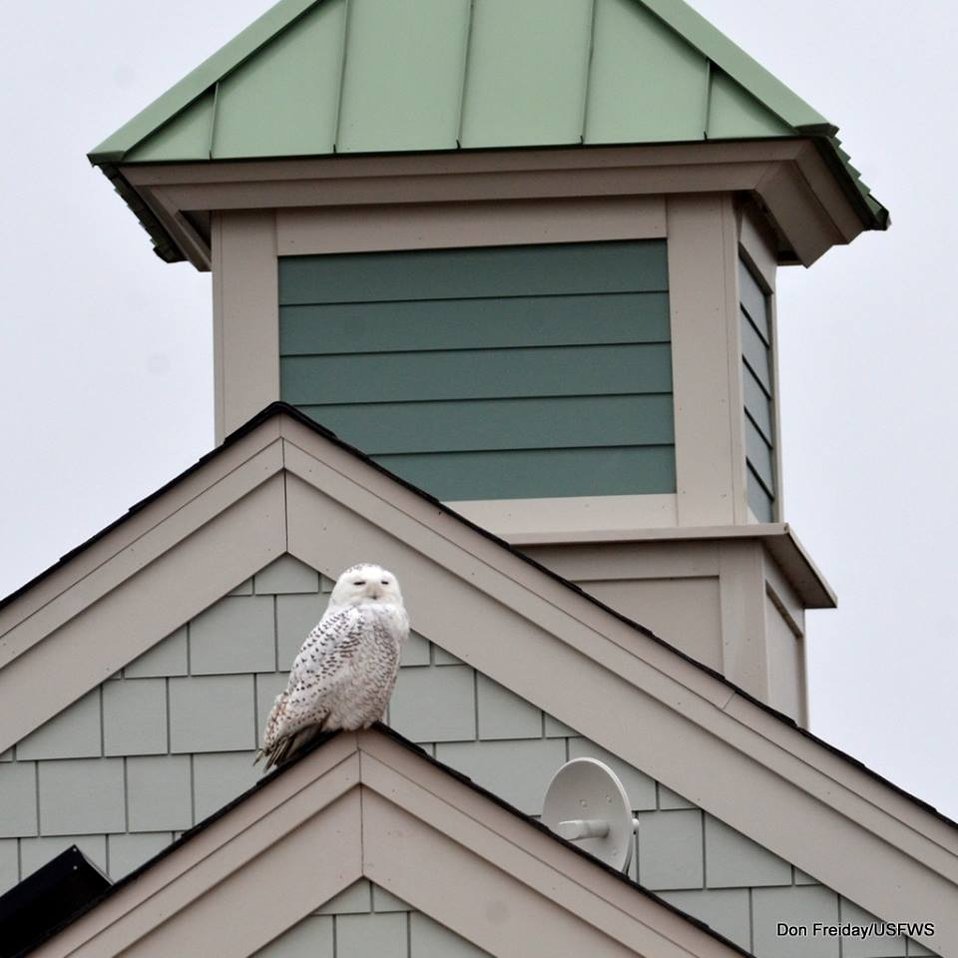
Edwin B. Forsythe Refuge

Atop the visitor center at Edwin B. Forsythe National Wildlife Refuge, NJ.